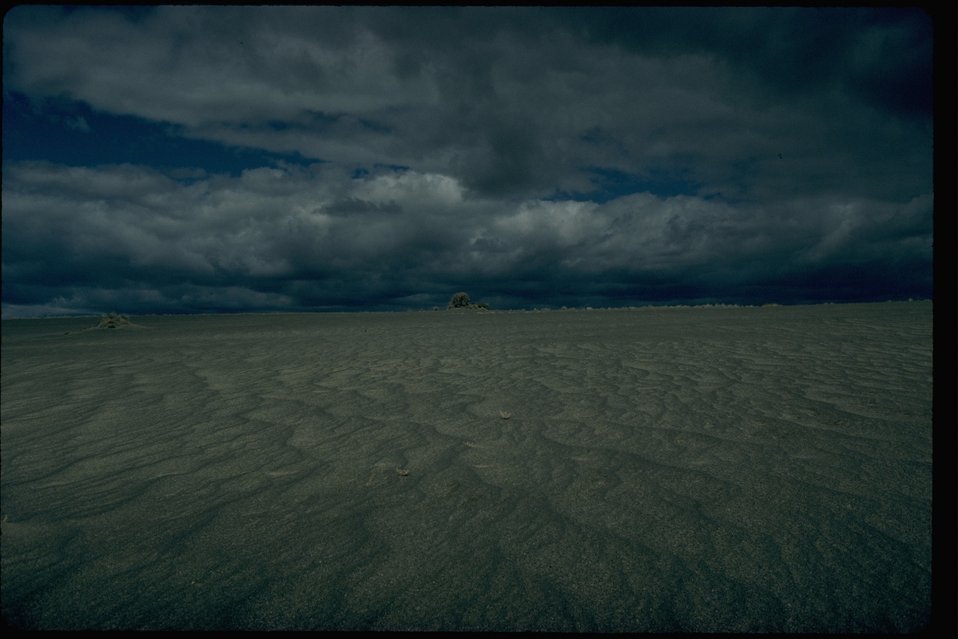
Sand Dunes Wilderness Study Area. OR 1-24